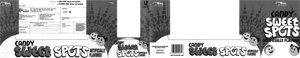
RECALLED – Candy “Sweet Spots”

December 12, 2013 – Product Recall – Bee International Issues Allergy Alert on Undeclared Egg in 'Sweet Spots'.